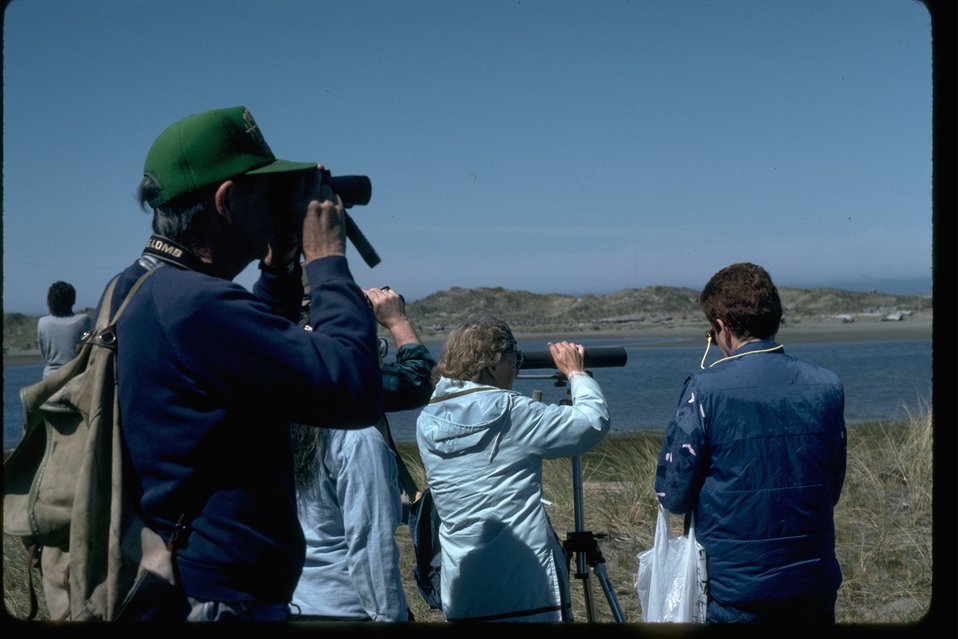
Bird Watching at New River.